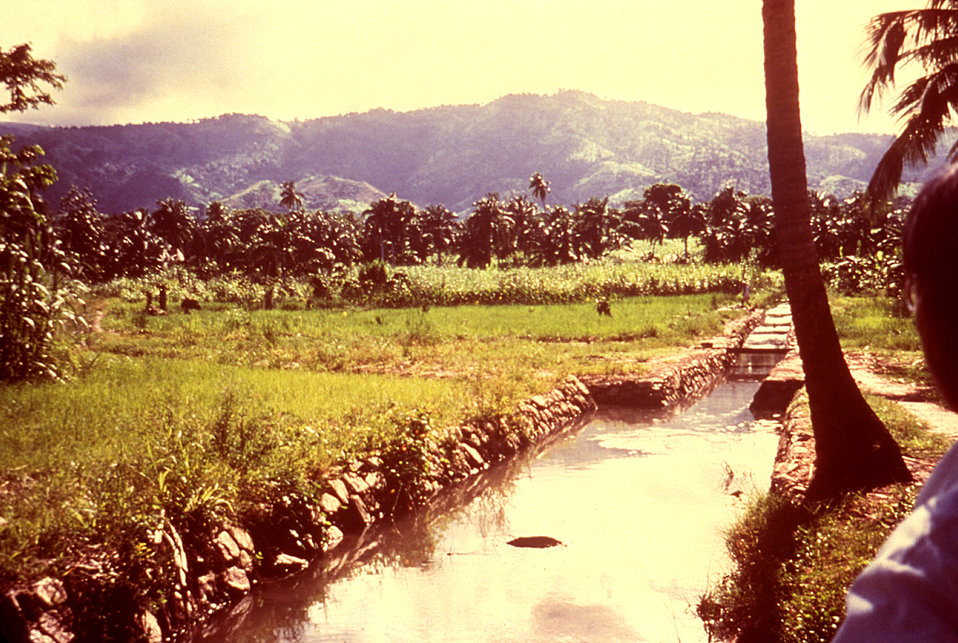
This drainage canal was constructed in order to provide a permanent waterway promoting the free-flow of water through a malaria-prone region.